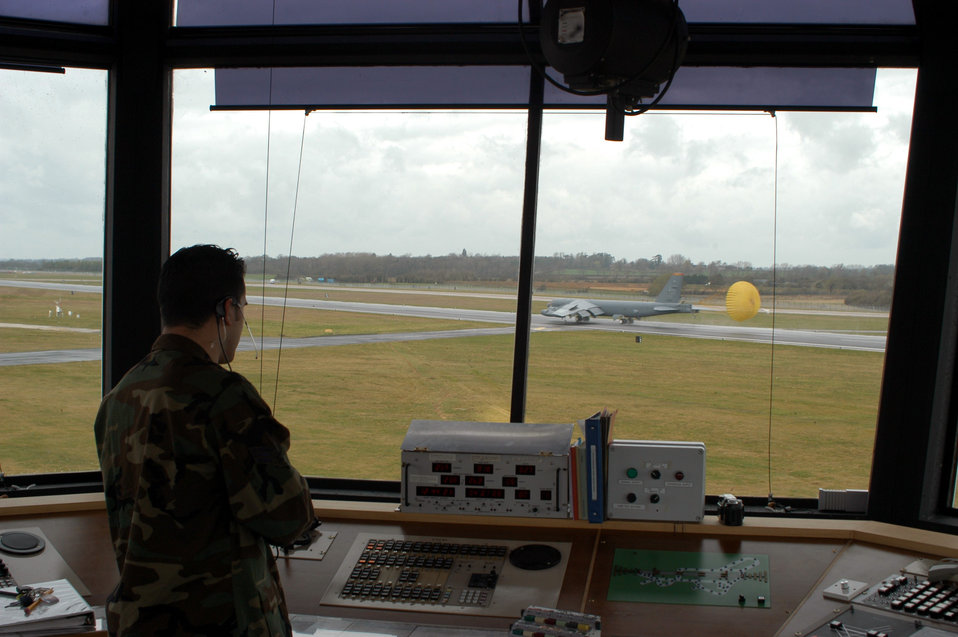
Traffic controller

OPERATION IRAQI FREEDOM -- Air traffic controller Senior Airman Steve Haro directs the crew of a B-52 Stratofortress shortly after the aircraft landed at a forward-deployed location supporting Operation Iraqi Freedom.